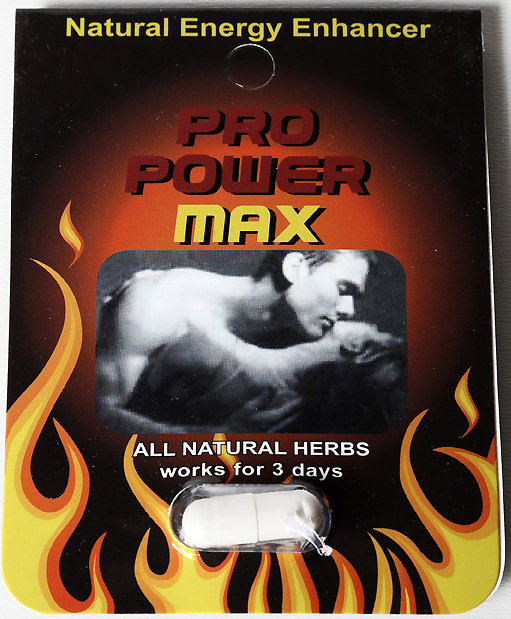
RECALLED – Dietary Supplement

August 27, 2013 – Product Recall – Hardmenstore.com Issues Voluntary Nationwide Recall of 72HP, Evil Root and Pro Power Max Due to Undeclared Sildenafil.